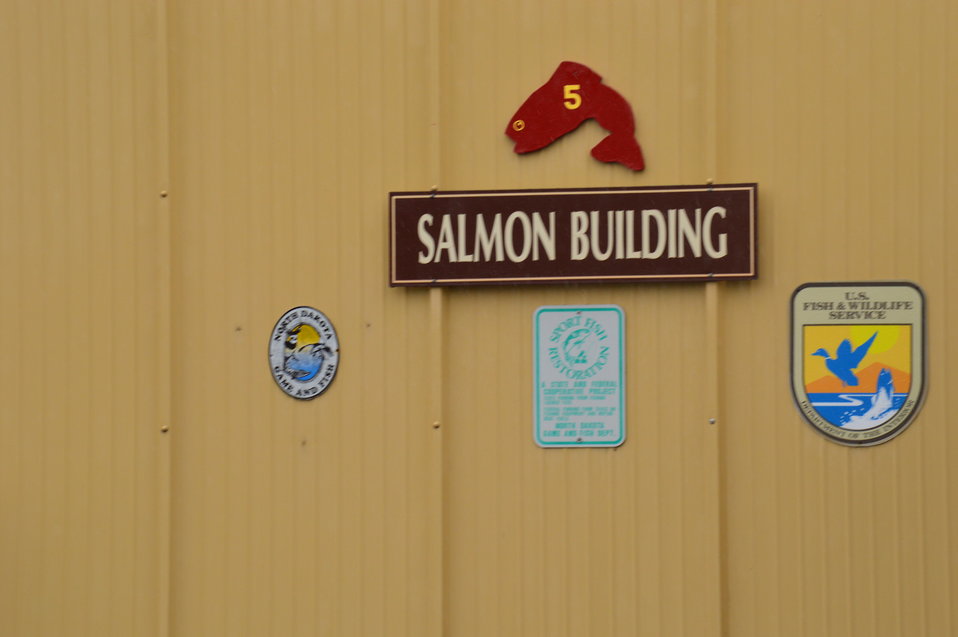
Salmon Building

Garrison Dam National Fish Hatchery in North Dakota.